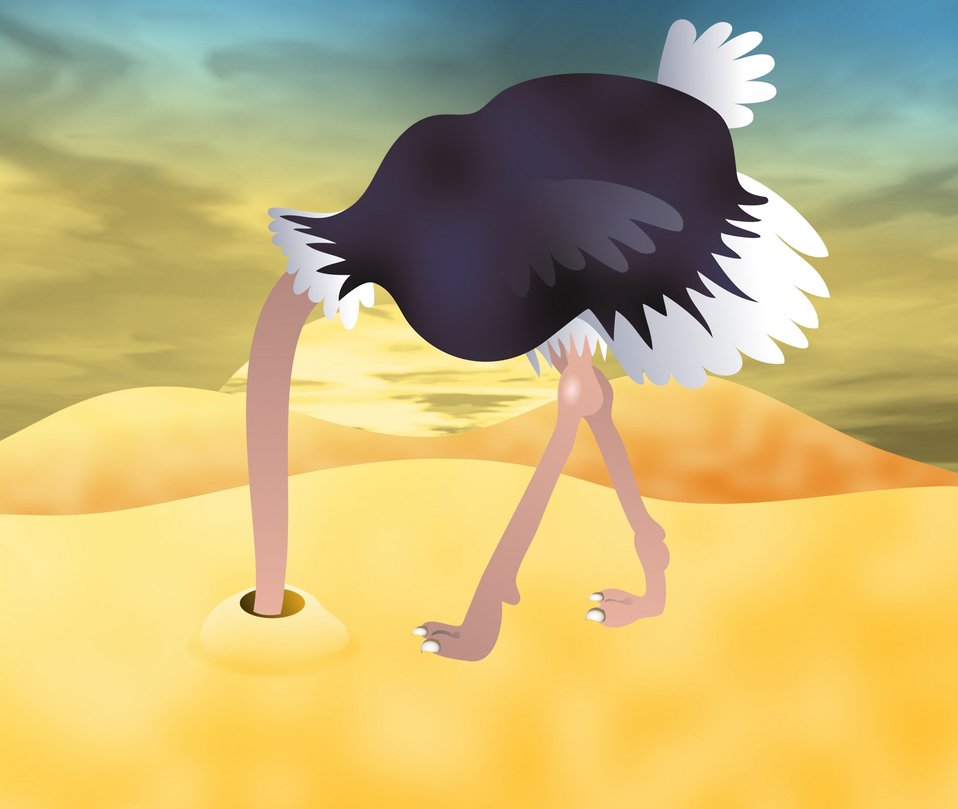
Ostrich clip art

Digitally created cartoon ostrich burying it's head in the sand..